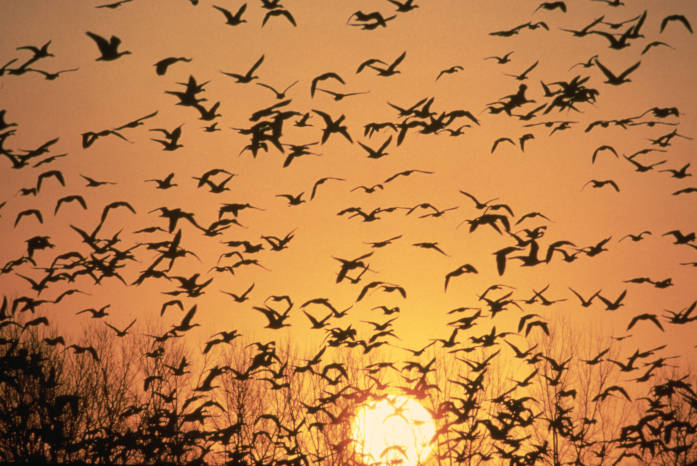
geese at sunset by dave menke